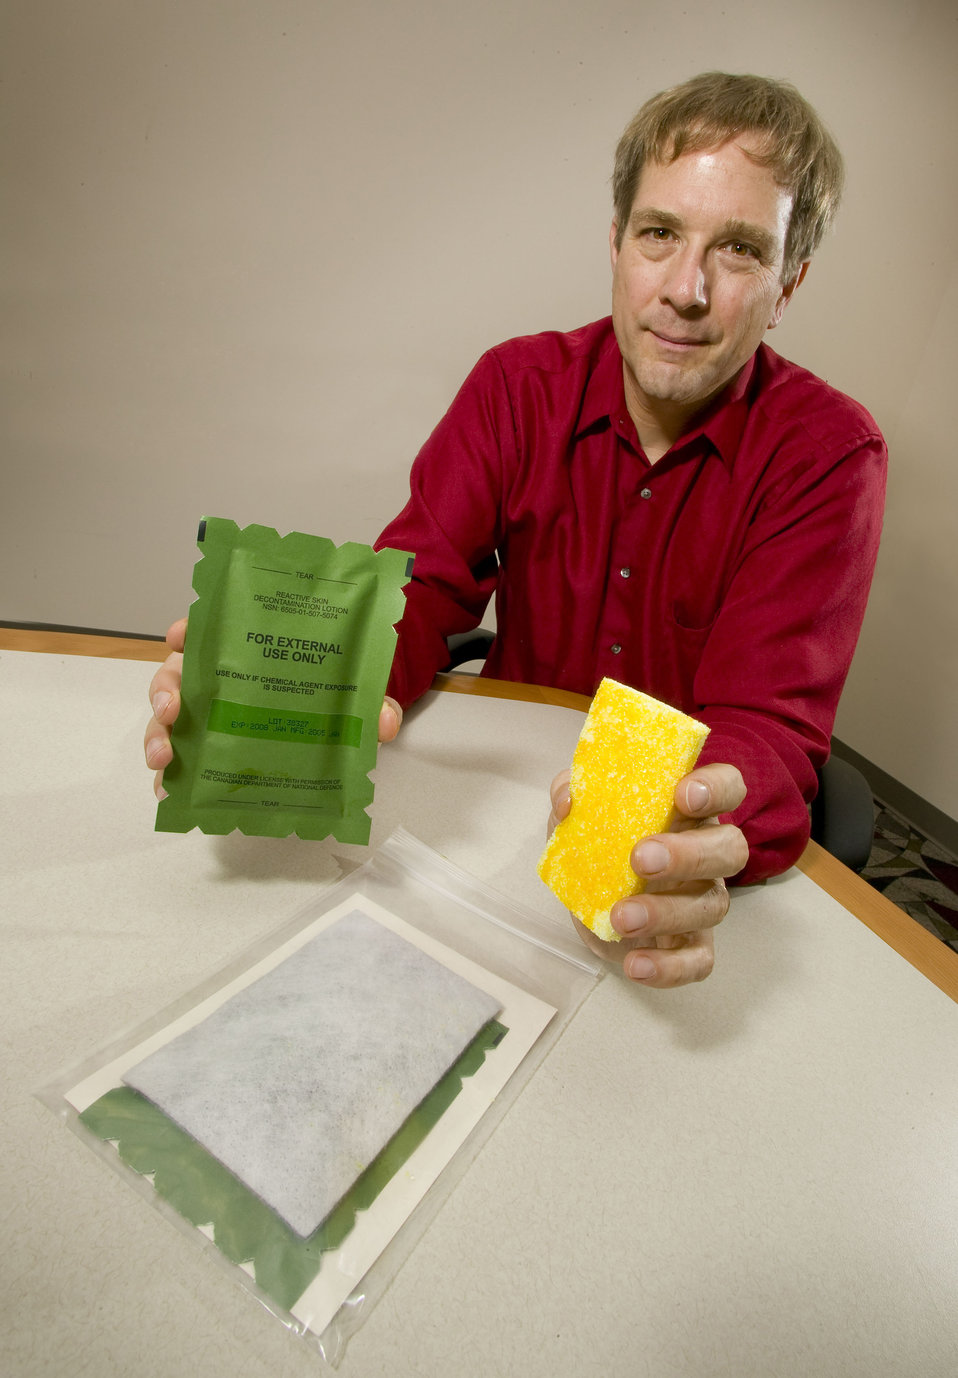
LLNL chemical engineer William Smith holds a decontamination system currently used by the military-- called Reactive Skin Decontamination Lotion-- in the green packet and a sponge from the system.

LLNL's Forensic Science Center evaluated 30 different decontamination materials for removing gross chemical contamination from surfaces, including the nonwoven dry wipe material with an activated carbon core sandwiched between two absorbent layers shown in the plastic package. The scientists have reported on the development of a layer wipe that can be used to rapidly decontaminate people and equipment exposed to a wide range of military and industrial chemicals, including the blister agent sulfur mustard. These wipes could assist in saving lives of soldiers and civilians.